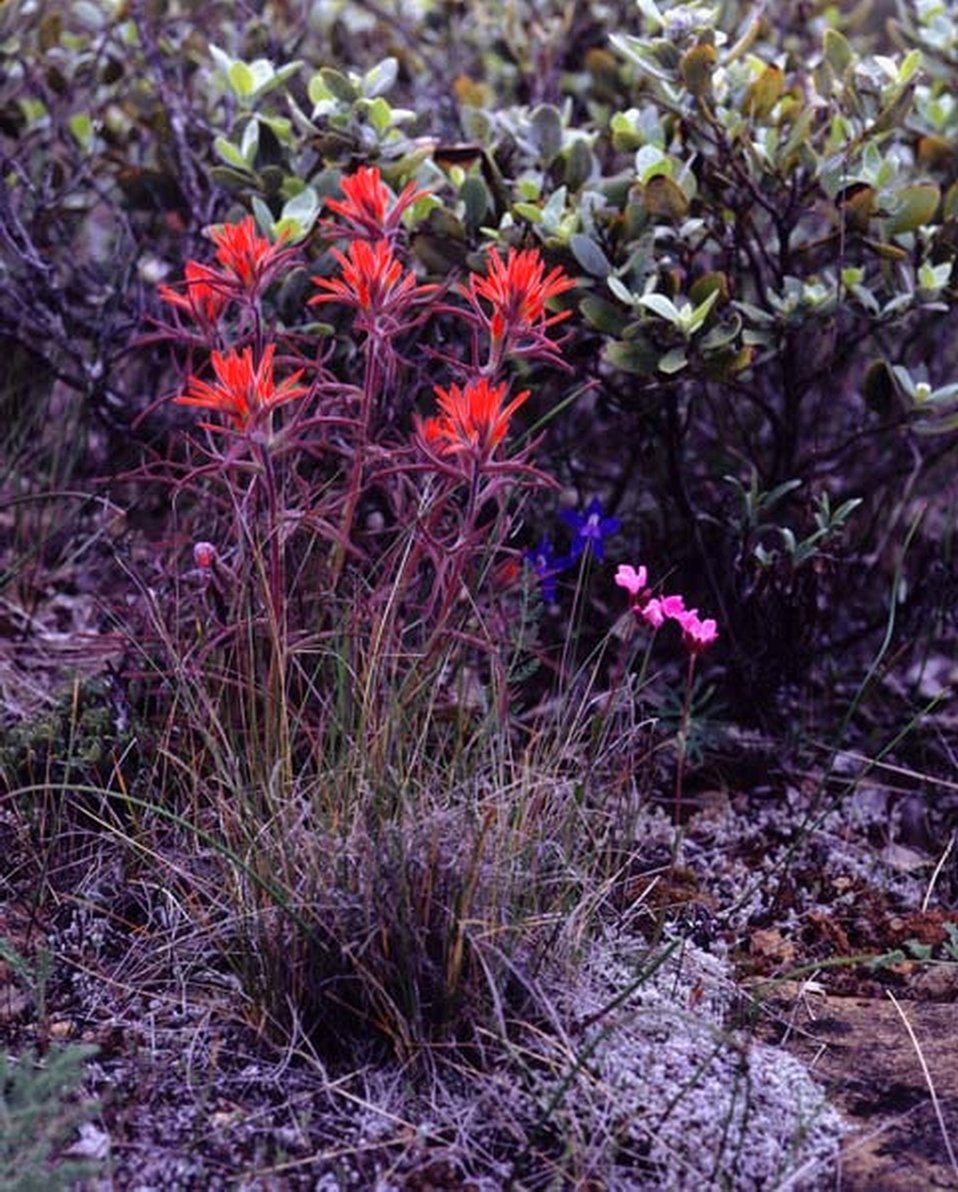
Medium shot of Indian Paintbrush wildflower.